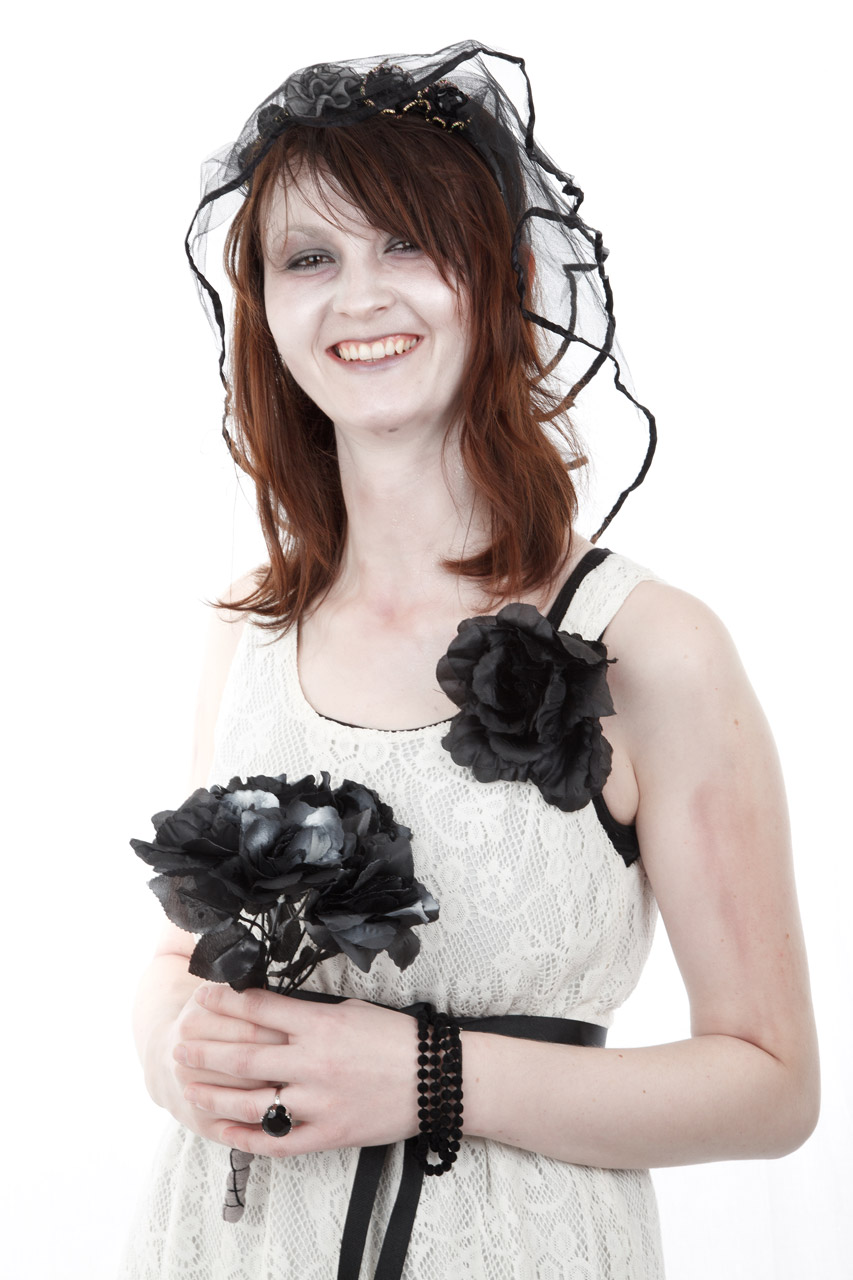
Halloween wedding

Corpse bride isolated on white background.